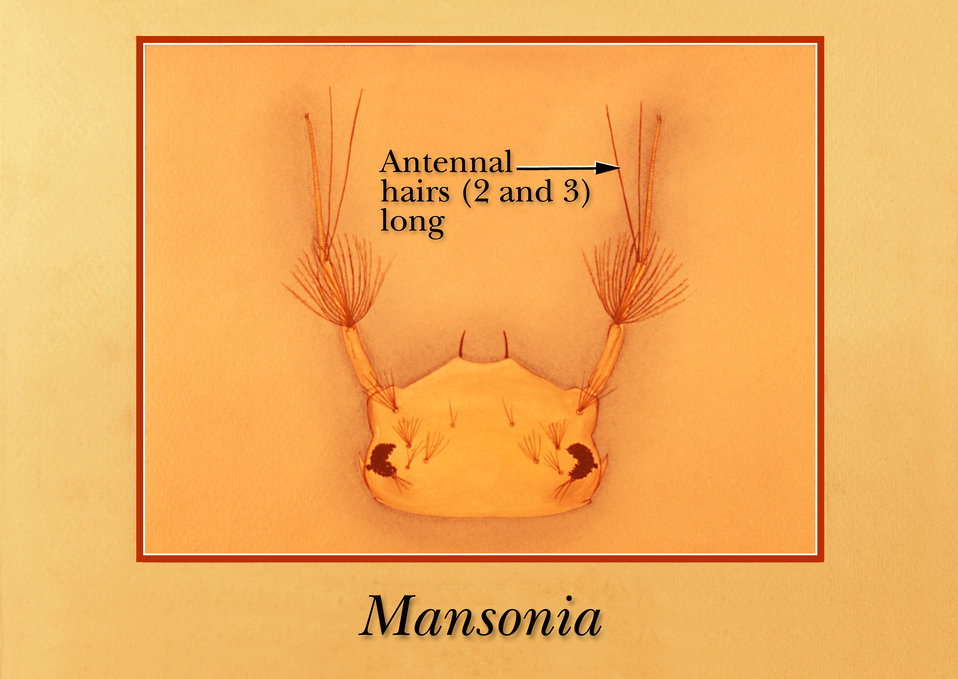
Drawing identifying the antennal structures on the head region of a Mansonia mosquito larva.